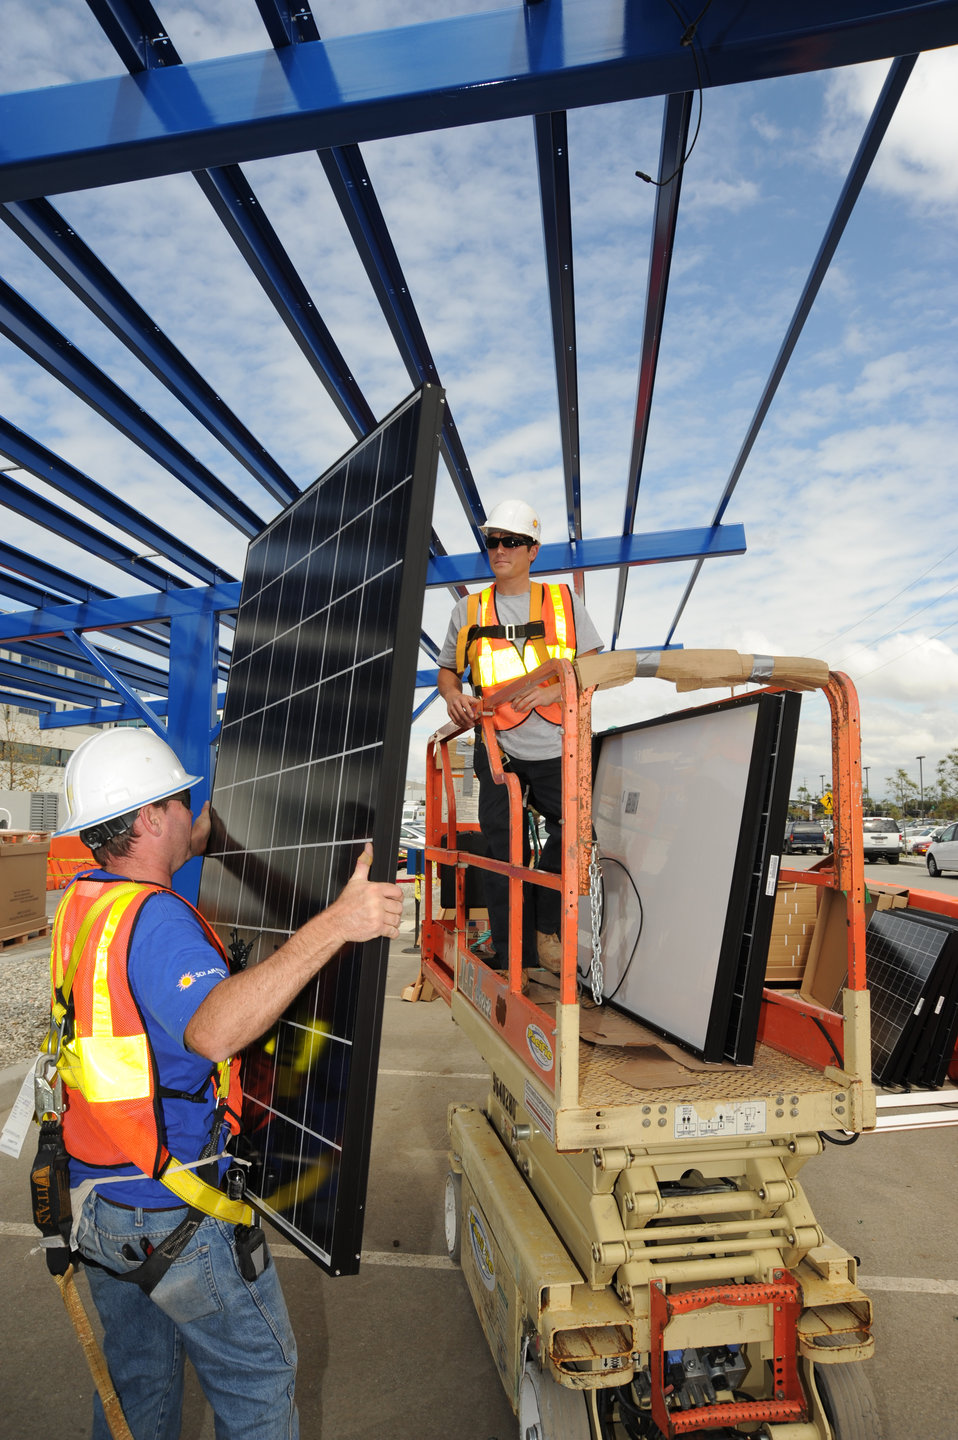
Solar power

Work continues on the solar panels being installed on Los Angeles Air Force Base, Calif. When completed, the panels will decrease the amount of electricity the base purchases from the local power company. A similar project on the roof of the base commissary converts sunshine into about 290 kilowatt-hours of electricity each day, enough to power 10 typical households.